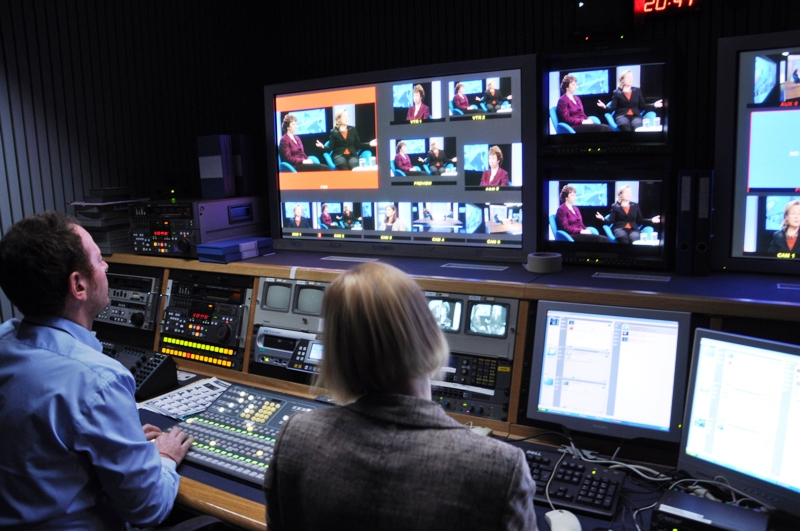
Behind the Scenes: Secretary Clinton and EU High Representative Ashton Participate in a Joint BBC Interview

Behind the Scenes: U.S. Secretary of State Hillary Rodham Clinton and EU High Representative Catherine Ashton participate in a joint BBC interview in Brussels, October 14, 2010.